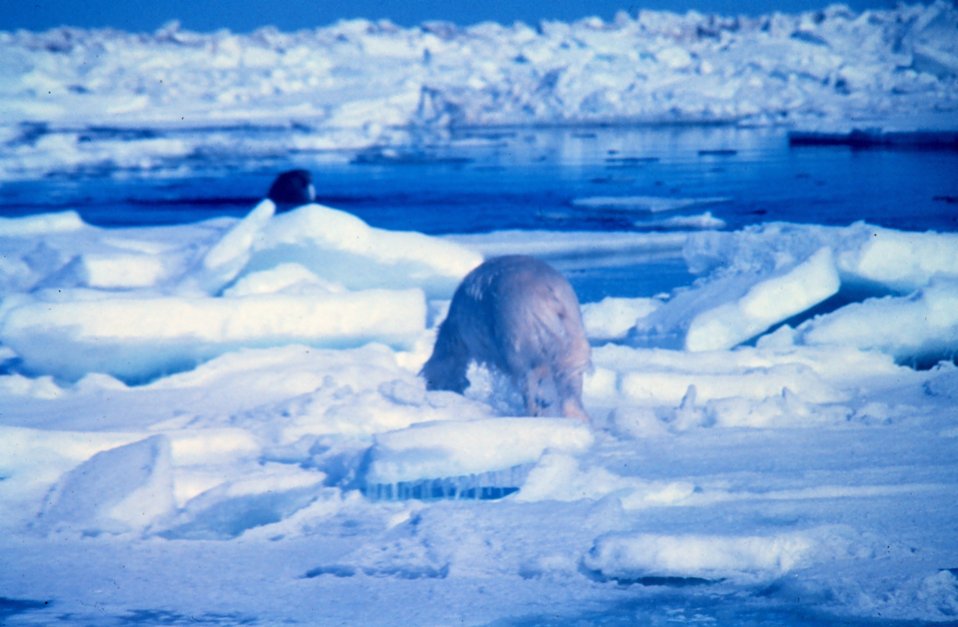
Polar bear - Ursus maritimus - appears to be stalking walrus - in fact was running from helicopter noise.